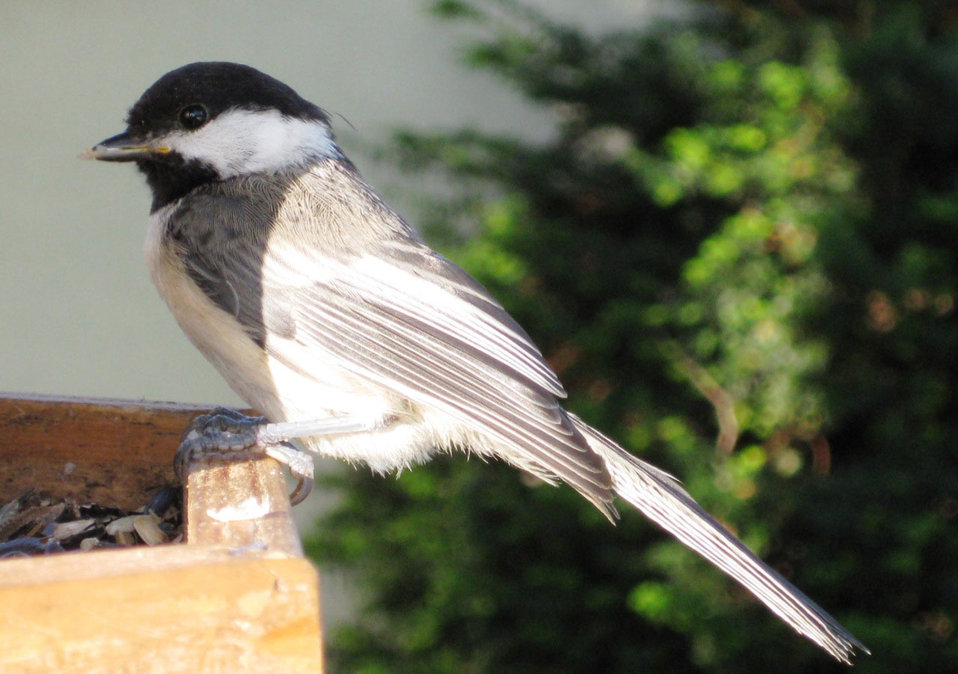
Black-capped chickadee

Chickadee at the bird feeder.